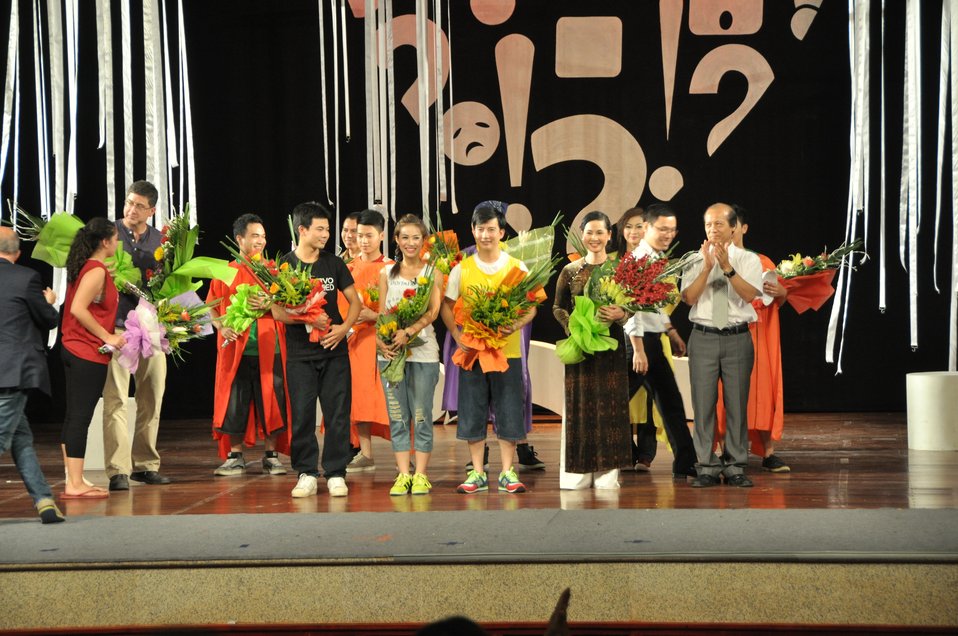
PEPFAR Musical Questions and Exclamations